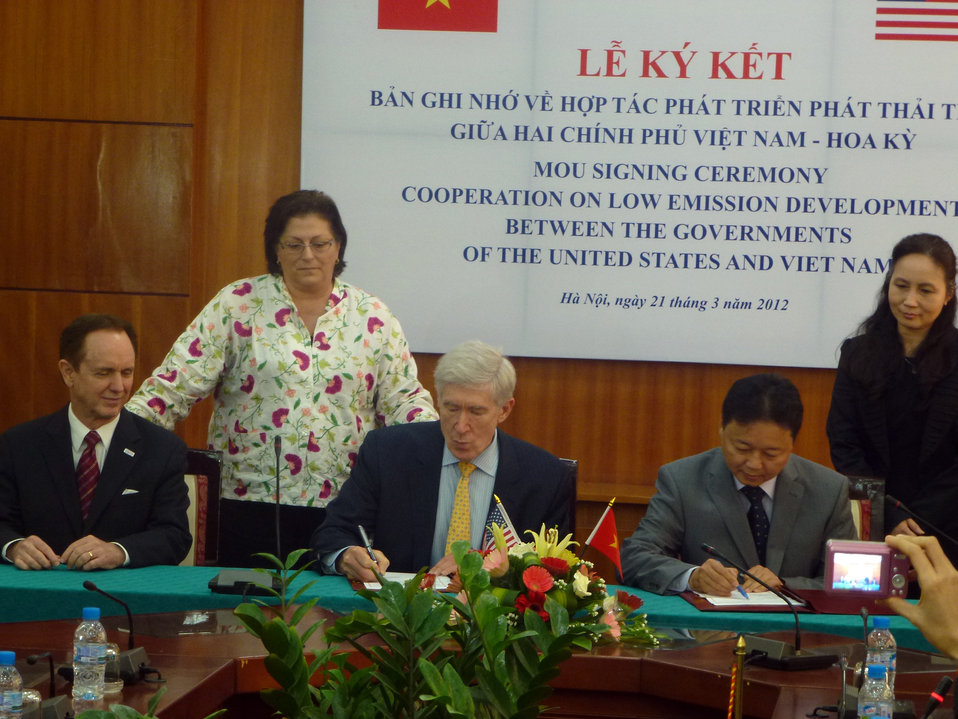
U.S.-Vietnam MOU on Low Emissions Development Strategies Signing Ceremony